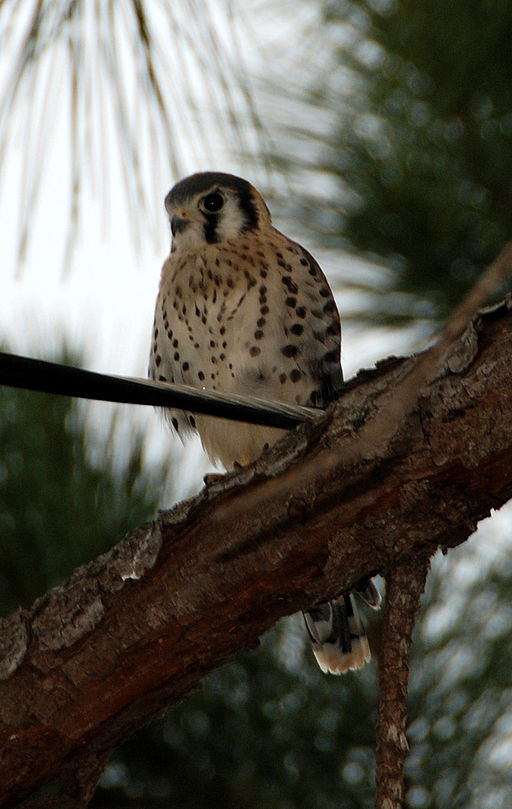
American kestrel